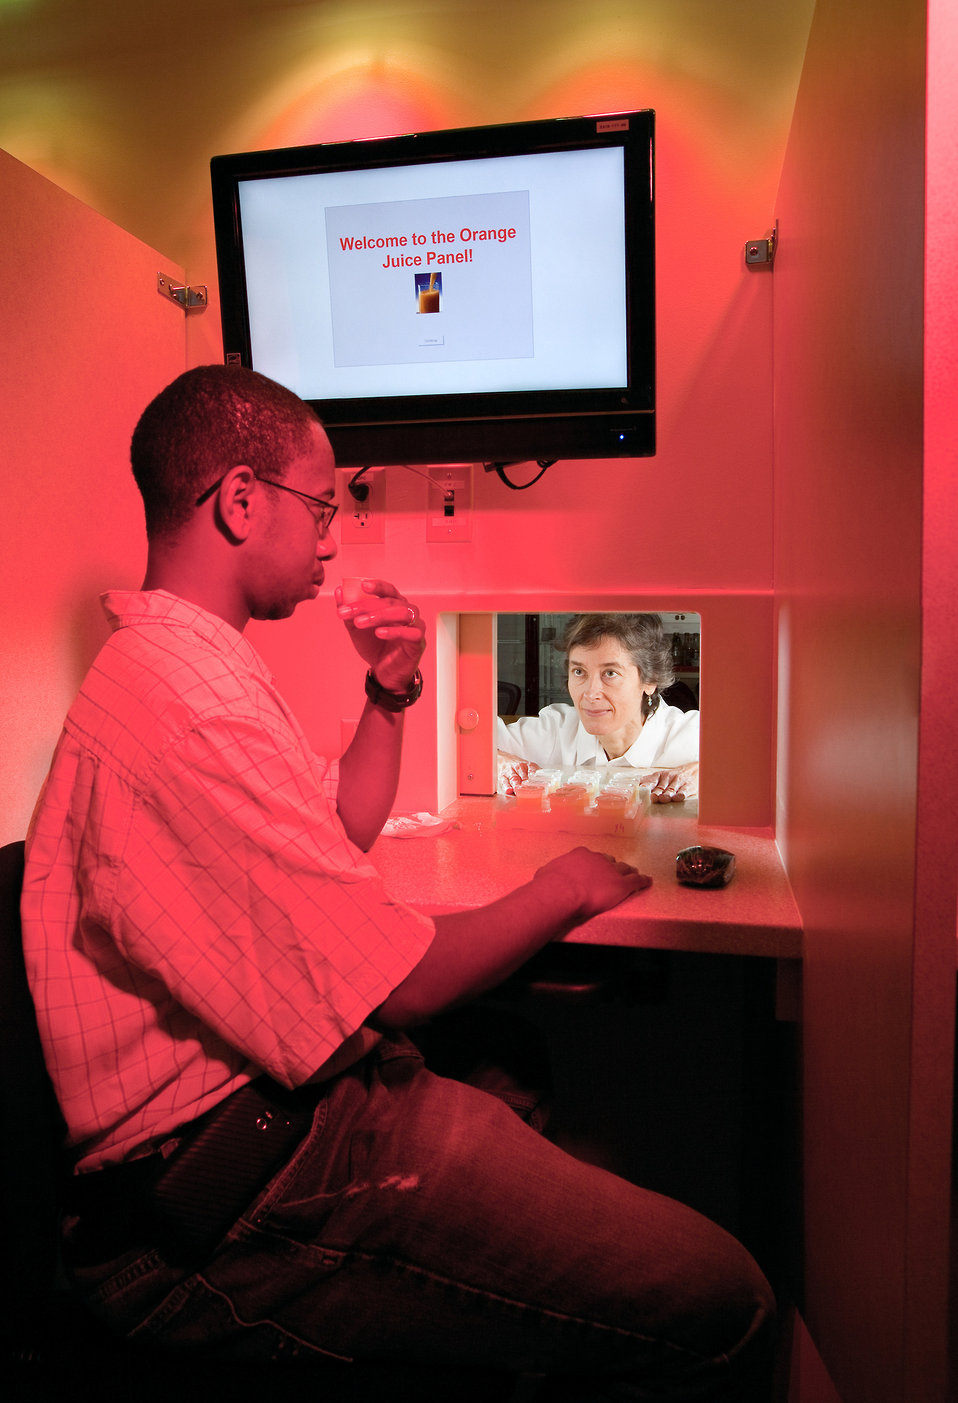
U.S. Department of Agriculture (USDA) Agricultural Research Service (ARS) plant physiologist Anne Plotto hands juice samples to taste-tester Keith Williamson to see whether off-flavors are perceived in juice from HLB-infected oranges at the ARS Horticultural Research Laboratory in For Pierce, FL on May 21, 2012. The red lighting in the tasting booth helps Williamson focus only on taste and smell.